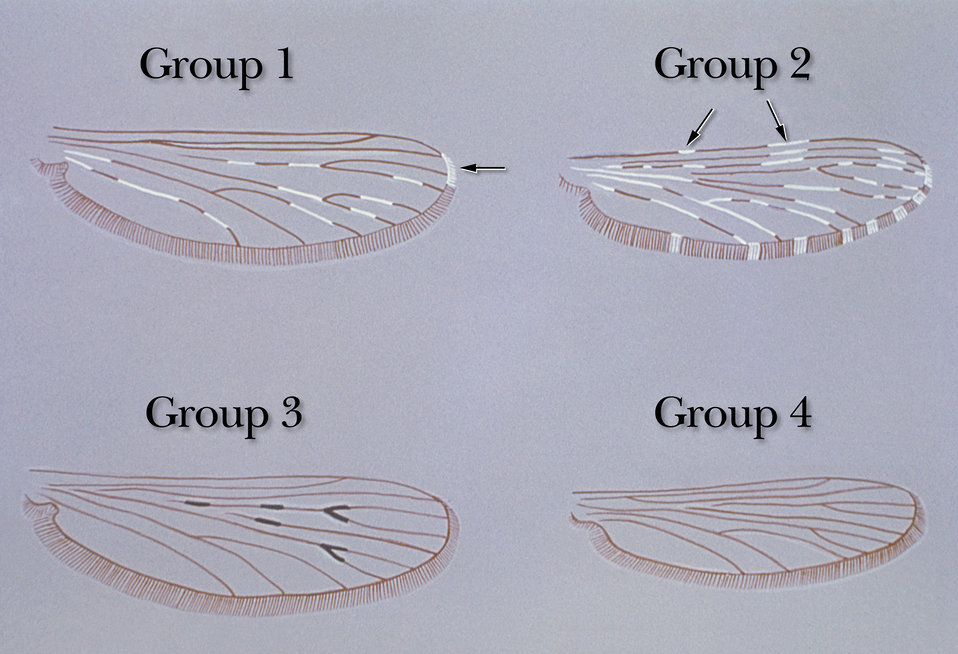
Illustration depicting variations in Anopheles mosquito wing patterns.